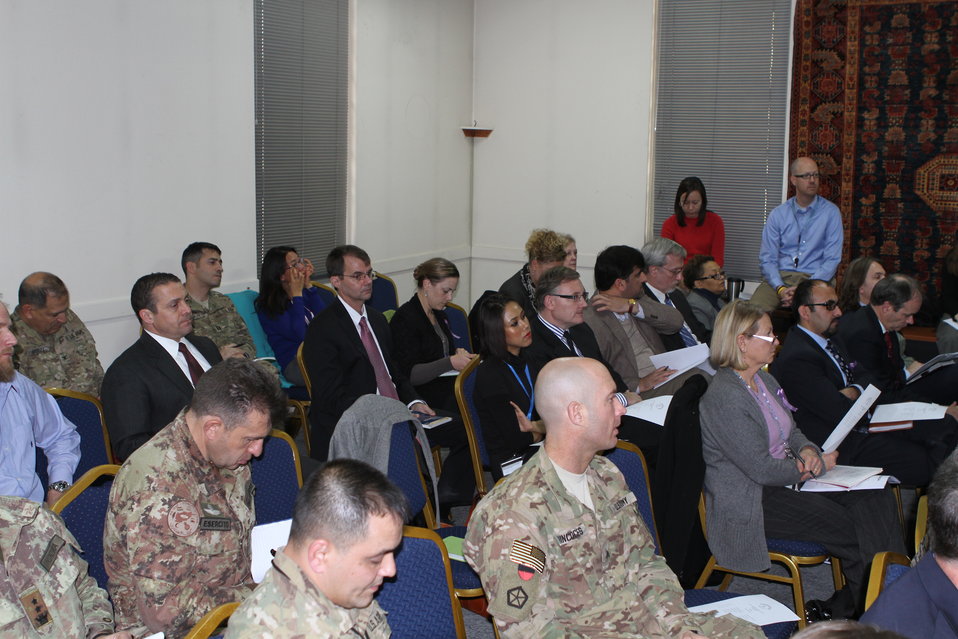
Presentation of the ACTA Civil Society analysis of the FY 1392 Afghan national budget